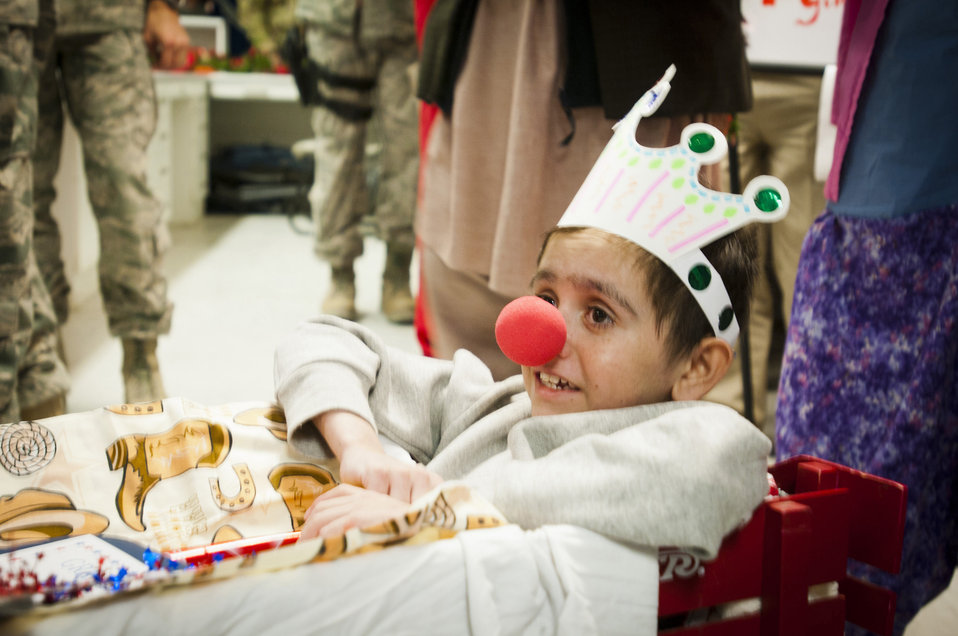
Craig Joint-Theater Hospital's longest resident inspires staff

Najibullah, 10, performs his duties as the grand marshal of the Craig Joint-Theater Hospital on Jan. 1, 2012, during a New Year's Day parade. He was severely injured in the stomach July 20, 2011, in Ghazni province.